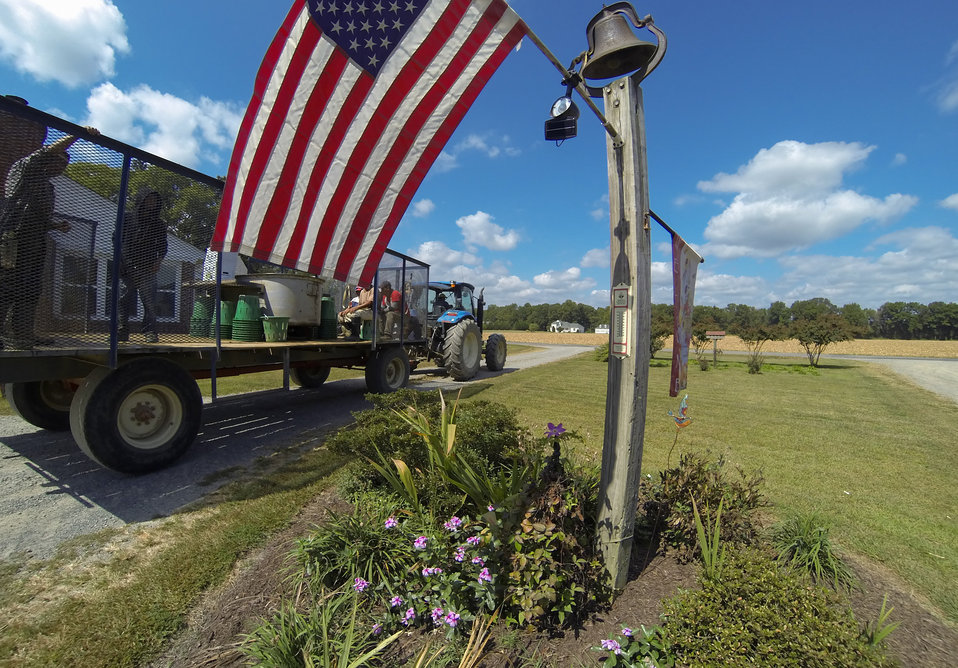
Migrant workers head back to the fields to pick squash, at Kirby Farms in Mechanicsville, VA on Friday, Sept. 20, 2013. Kirby Farms devotes 200 acres of the farm to eggplant, spinach, beets, tomato, jalapeno peppers, melons and a variety of greens. Soybeans and small grain are grown on the remaining 300 acres. The fertile Virginia soil and their management practices, allows Kirby Farms to double and triple crop fields with rotational crop selection. Wholesalers, who buy from this farm, sell the produce to major supermarkets in the Mid-Atlantic region, from North Carolina to Maryland. Restaurants in the local area prepare and serve their harvest to patrons in the Greater Richmond, VA Region.